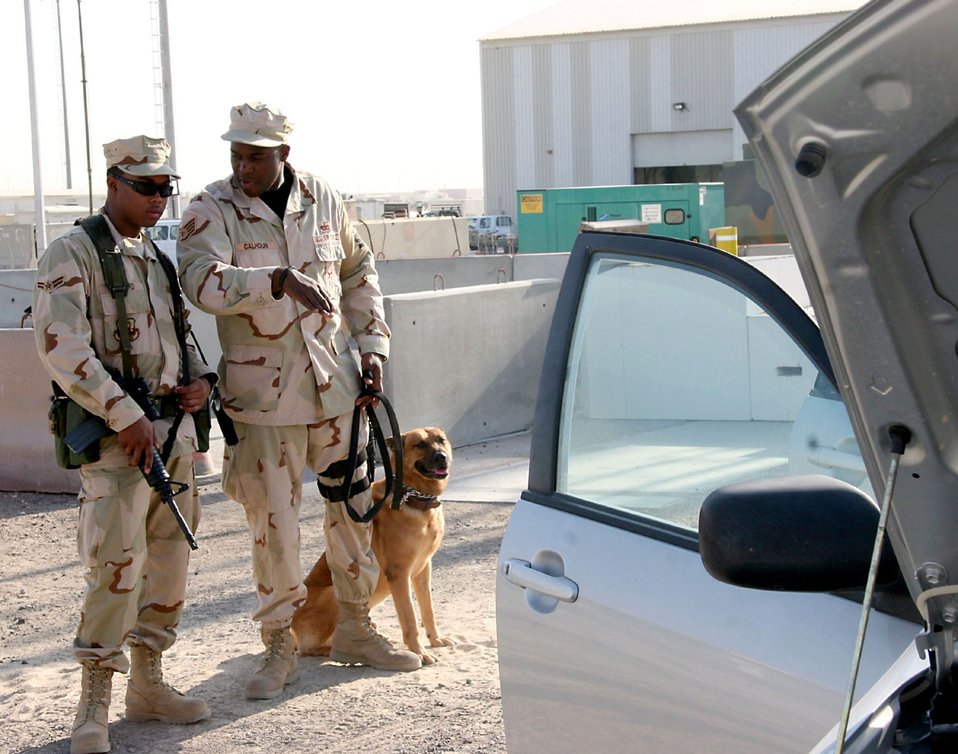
Brothers spent first deployment together

Staff Sgt. Malik Calhoun, 380th Expeditionary Security Forces Squadron K-9 handler with Arco, his Belgian Malinois patrol and explosive detection dog, explains the procedure of a vehicle sweep to his brother Airman 1st Class Dandre Bufford, 380th ESFS, who provides over watch during the training problem, Nov. 27. The brothers are deployed together in Southwest Asia, and were reunited Nov. 21 after being apart for more than two years.